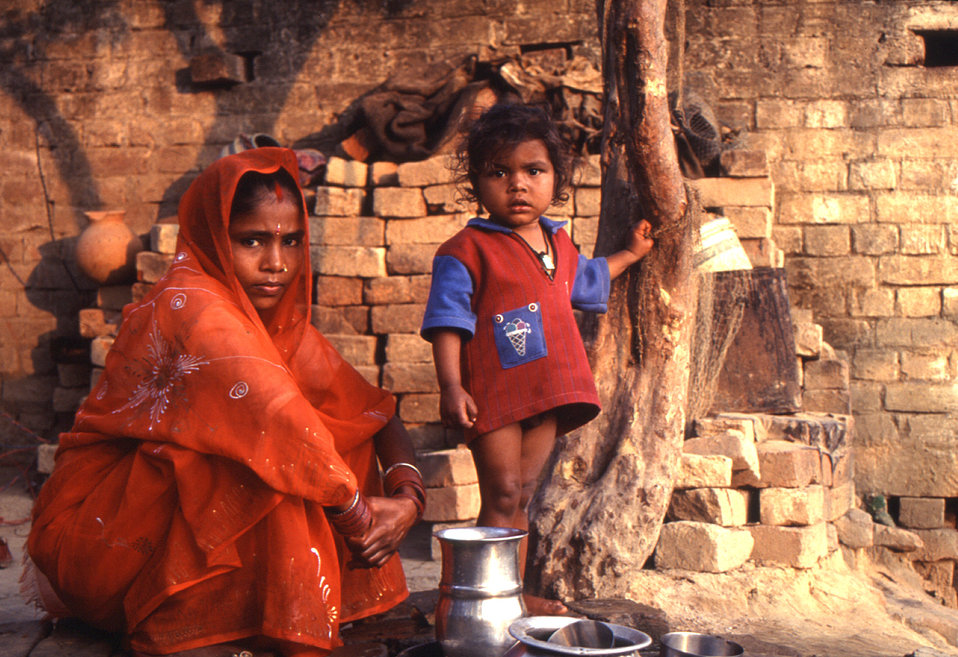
In this 2000 image, provided by Chris Zahniser, B.S.N., R.N., M.P.H., a Stop Transmission of Polio (STOP) immunization initiative team member and photographer, depicted an Indian mother and her child who'd been suspected of having a case of acute flaccid paralysis (AFP), brought on by having contracted poliomyelitis. During the time that this picture had been captured, health care practitioners were in the process of conducting a follow-up visit, in order to determine if there was indeed, a loss of muscle tone. Ms. Zahniser was at the time assigned to the state of Uttar Pradesh in northern India, and spent three months working in the Districts of Gorakhpur and Deoria.